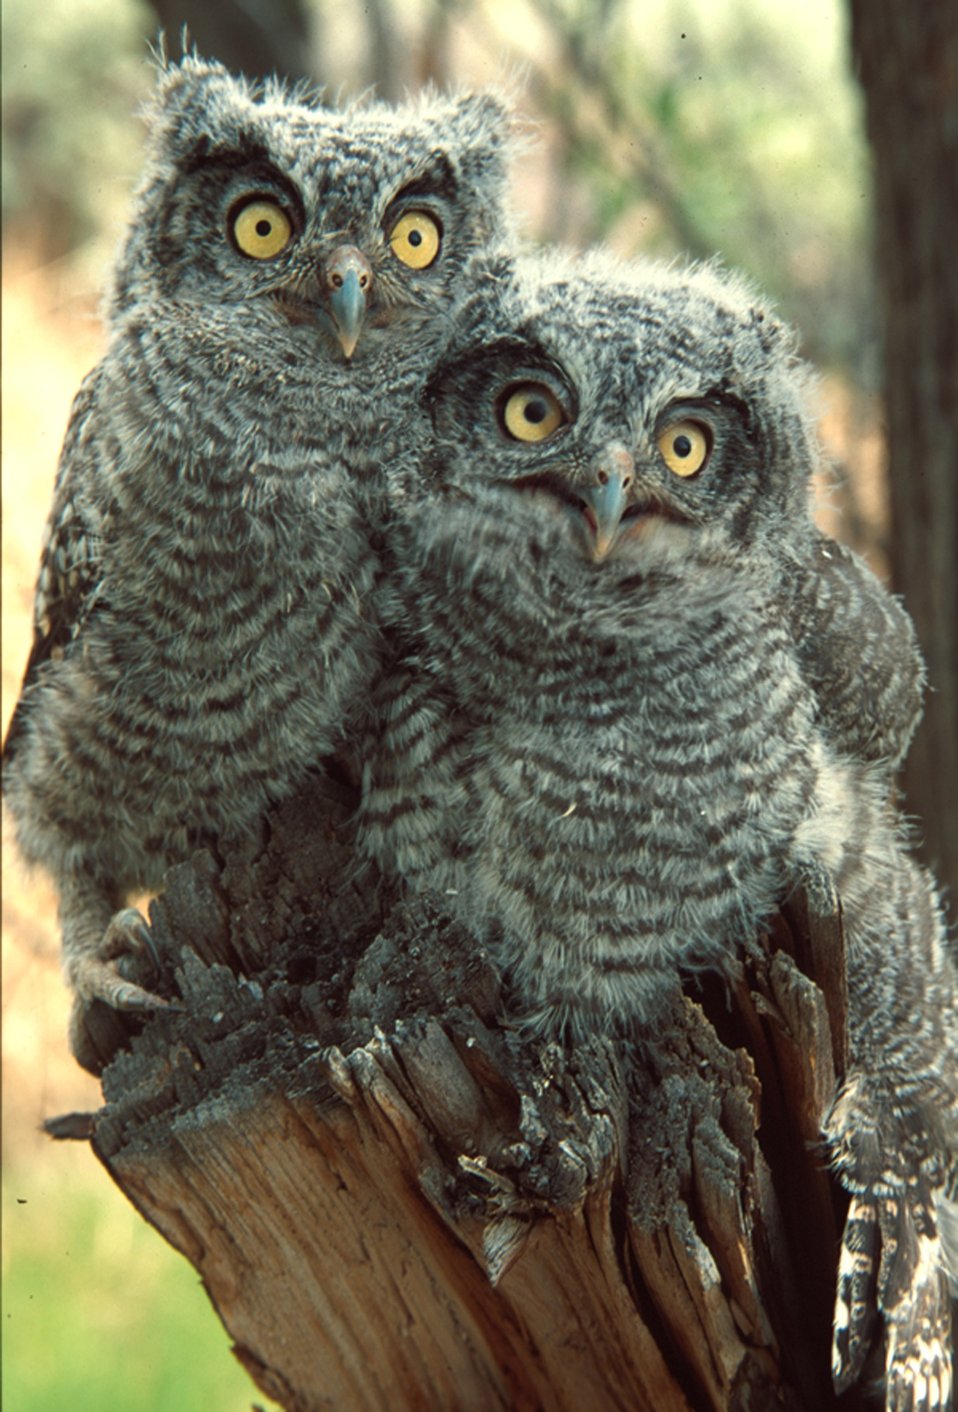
Juvenile Western Screech Owls Owyhee Field Office LSRD Lower Snake River District